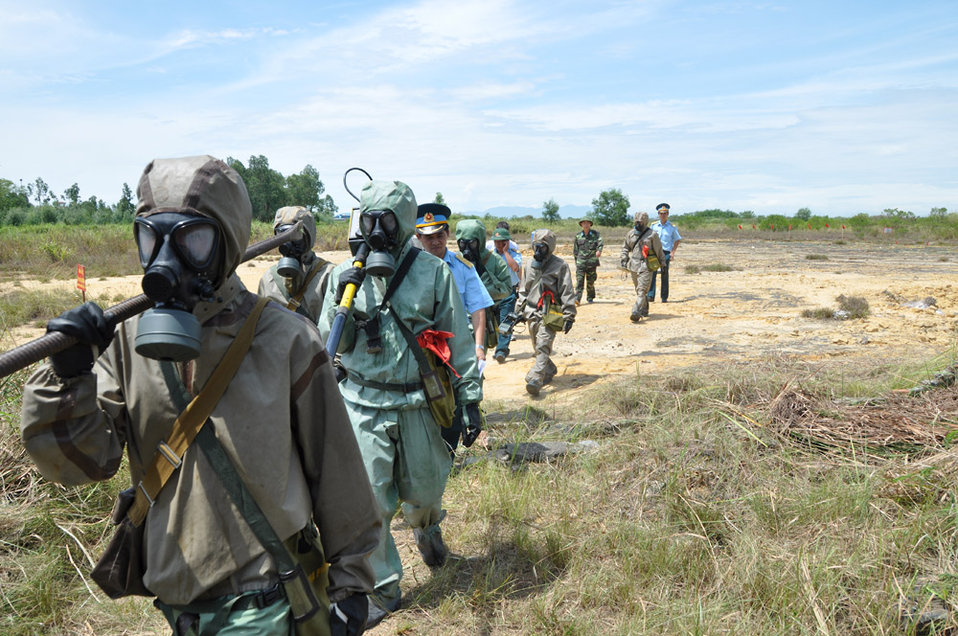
Vietnamese soldiers demonstrate UXO detection and clearance in Danang. June 17, 2011